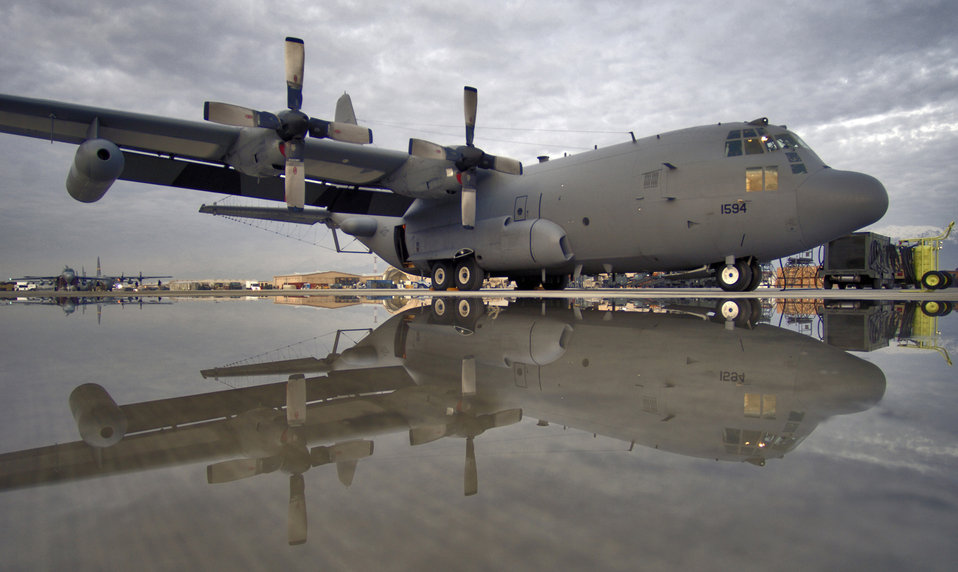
Compass Call keeps jamming

An EC-130H Compass Call from the 41st Expeditionary Electronic Control Squadron sits on the flightline at Bagram Air Base, Afghanistan, as its crew prepares for a night mission. The Compass Call is an airborne tactical weapon system used to deny, degrade and disrupt the enemy's ability to communicate. Since April 2004, 41st EECS EC-130s have flown more than 700 combat sorties supporting ground forces in Operation Enduring Freedom.